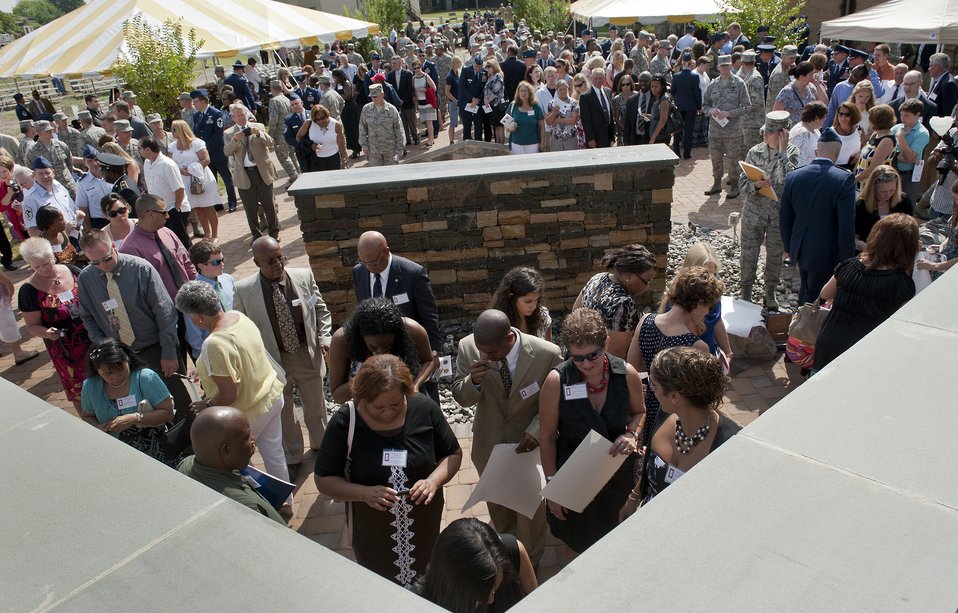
Air Advisor Memorial dedication

Family and friends of the nine Air Force air advisors who were killed in Afghanistan in 2011, gather at the Air Advisor Memorial at Joint Base McGuire-Dix-Lakehurst, N.J., July 27, 2012. The memorial was built through donations and volunteer labor.